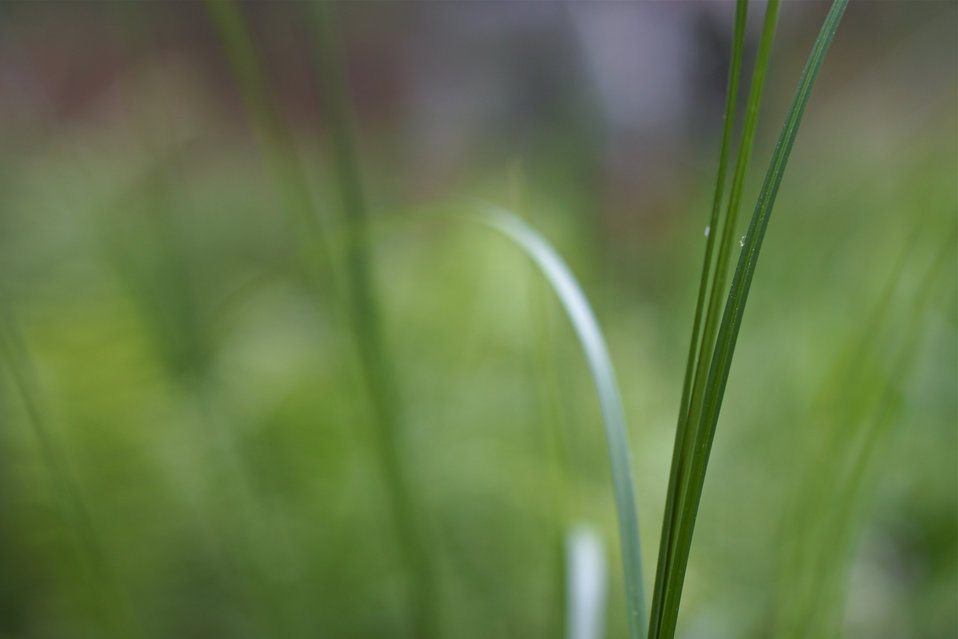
Grass leaves with a drop of water

In May, bog conservationists from Tennessee, North Carolina, and Georgia convened in the north Georgia mountains for the spring, 2014 meeting of the Bog Learning Network. The event provided an opportunity for biologists to see, first hand, the result of management efforts at two north Georgia bogs. More importantly, the outings provided an opportunity to share innovative approaches to bog management, such as the role of the Georgia Plant Conservation Alliance in conserving rare plants and coordinating a cadre of volunteers to work on bog management.

The Bog Learning Network was convened in the winter of 2013 as a way to bring together people working for bog conservation across the Southern Appalachians. Southern Appalachian bogs are one of North America’s rarest habitats and home to many rare plants and animals.